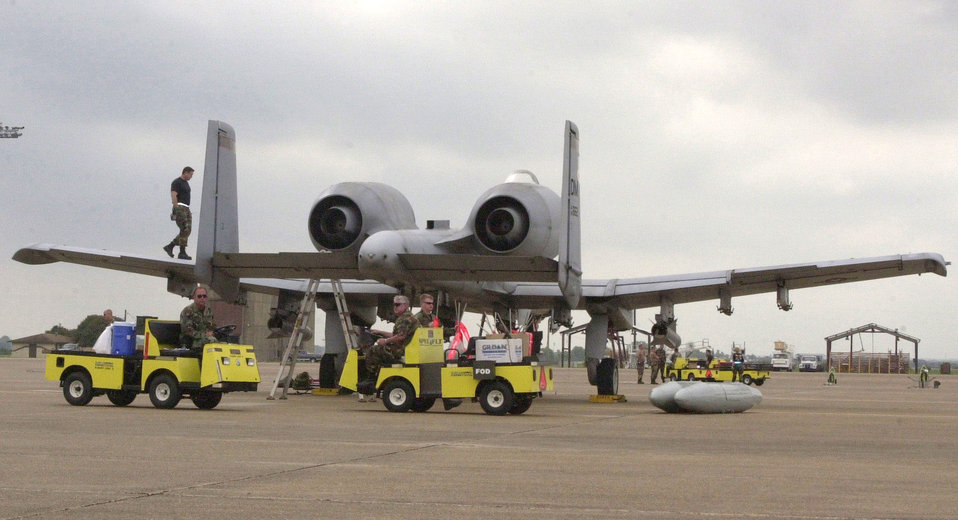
Stormy competition

ALEXANDRIA, La. -- Maintainers check an A-10 Thunderbolt II upon its arrival here for Hawgsmoke 2004, a biannual A-10 bombing and tactical gunnery competition. Severe weather canceled the competition April 30.